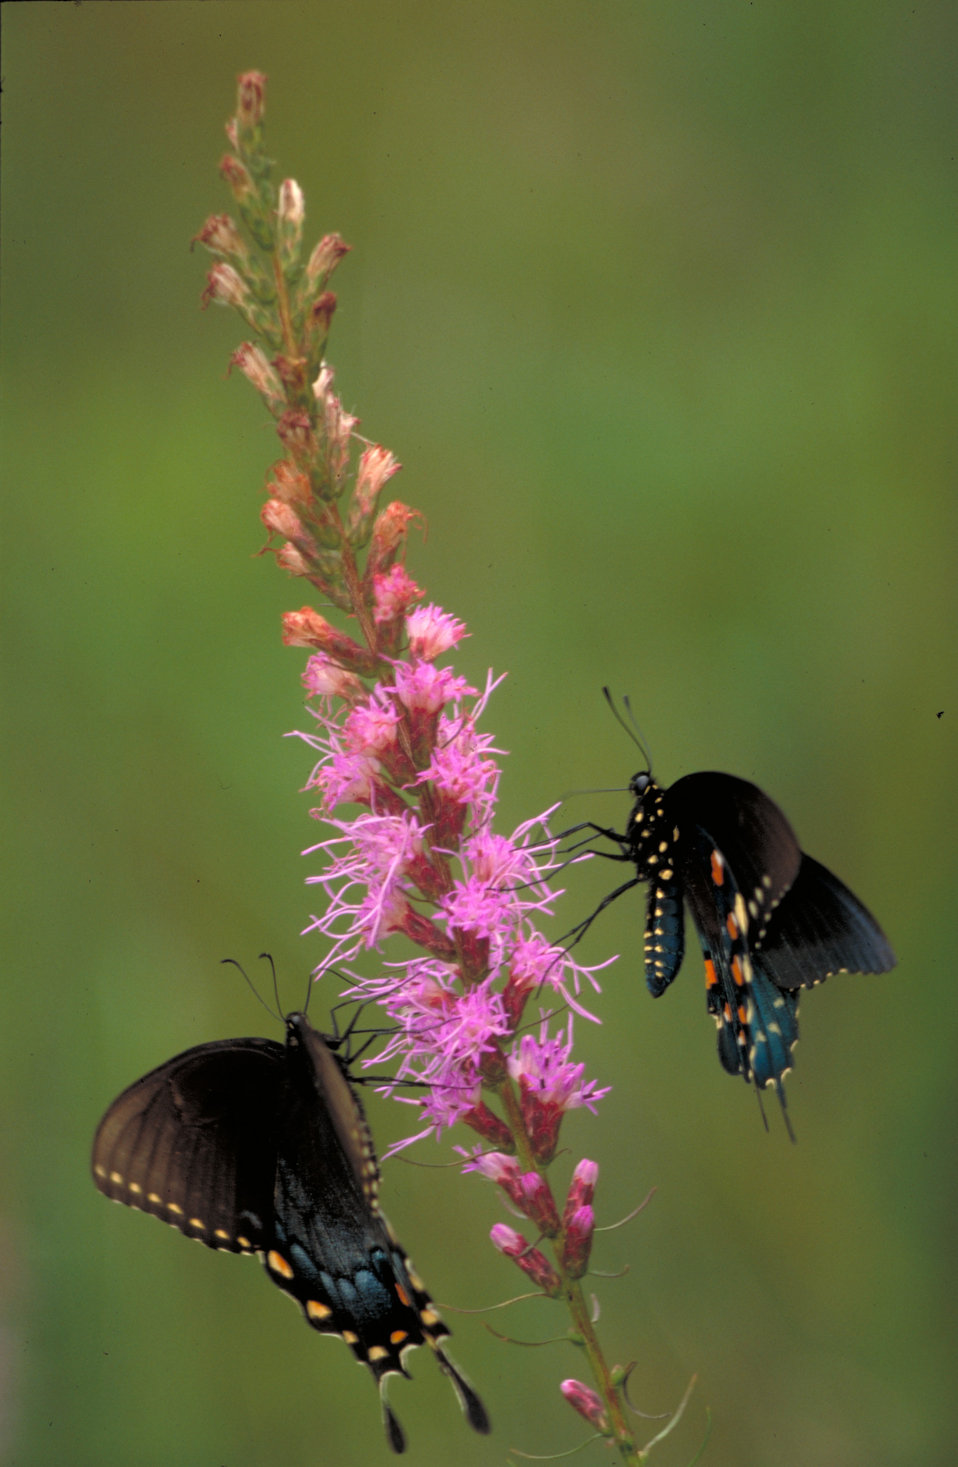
Black swallowtail and Pipevine swallowtail

Black swallowtail, also called Spicebush swallowtail, and black, orange and yellow butterfly on Dense blazingstar.